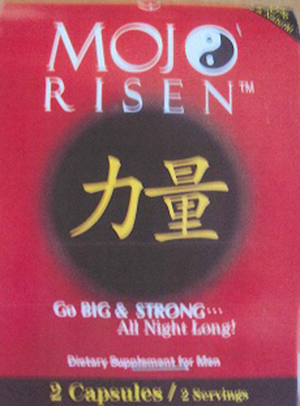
Mojo